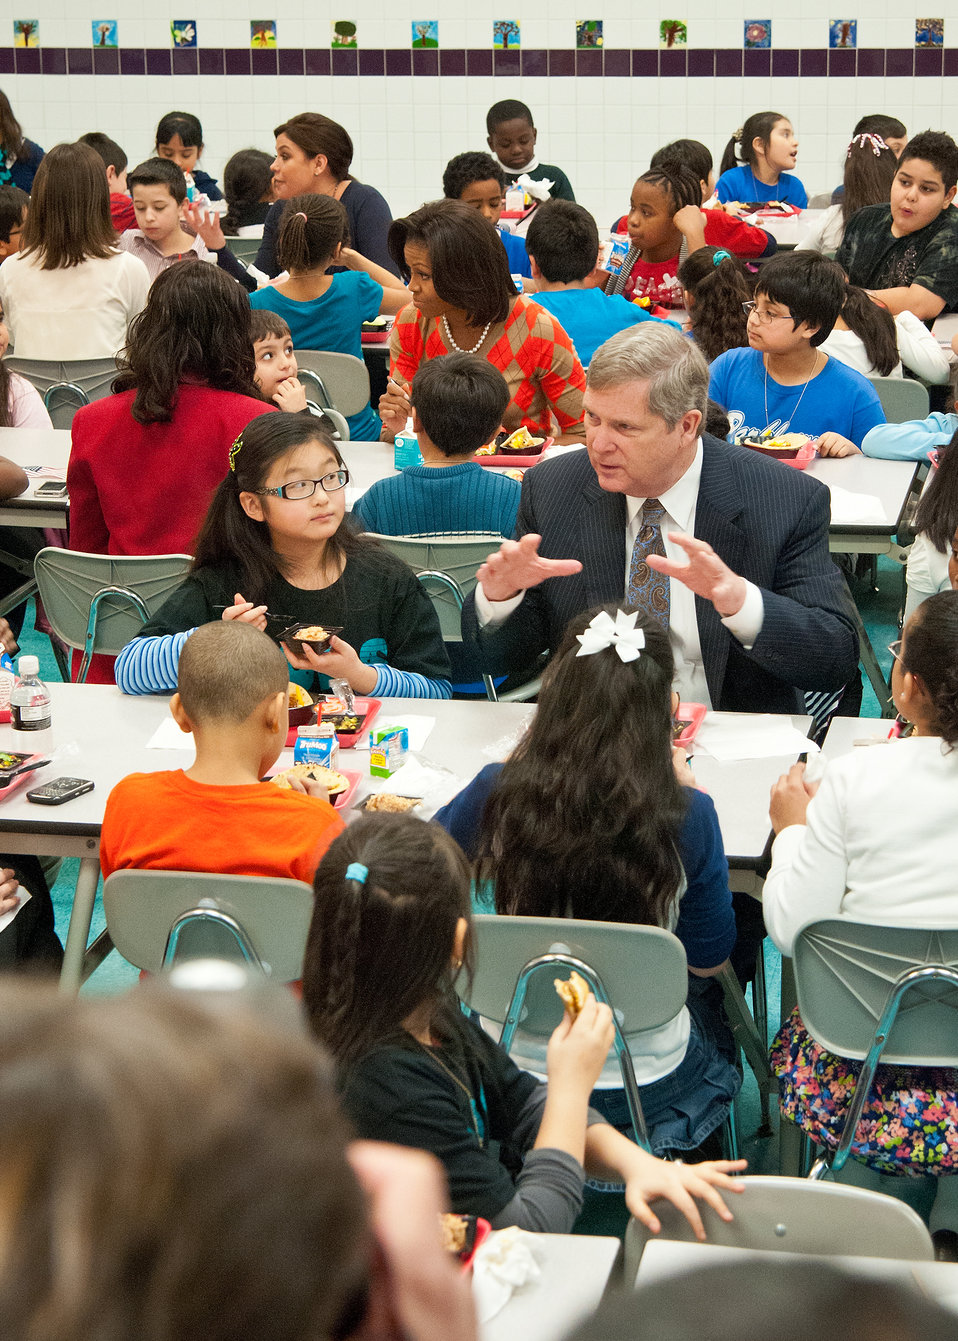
Agriculture Secretary Tom Vilsack joined First Lady Michelle Obama and celebrity cook Rachel Ray at Parklawn Elementary School in Alexandria, Virginia, on Wednesday, January 25, 2012 to speak with faculty and parents about the United States Department of Agriculture’s new and improved nutrition standards for school lunches. An important accomplishment of the Healthy, Hunger-Free Kids Act that President Obama signed into law last year, USDA is making the first major changes in school meals in over 15 years. The new standards encourage fruits and vegetables every day of the week, increasing offerings of whole grain-rich foods, offering only fat-free or low-fat milk and making sure kids are getting proper portion sizes.